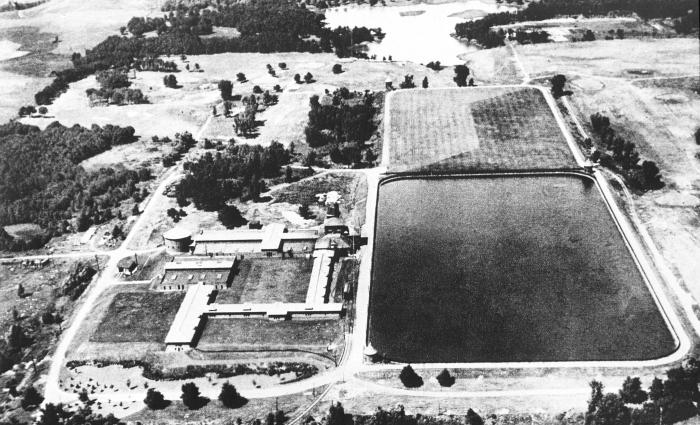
From an aerial view, this historic 1931 photograph showed the Findley, Minnesota water filtration plant.